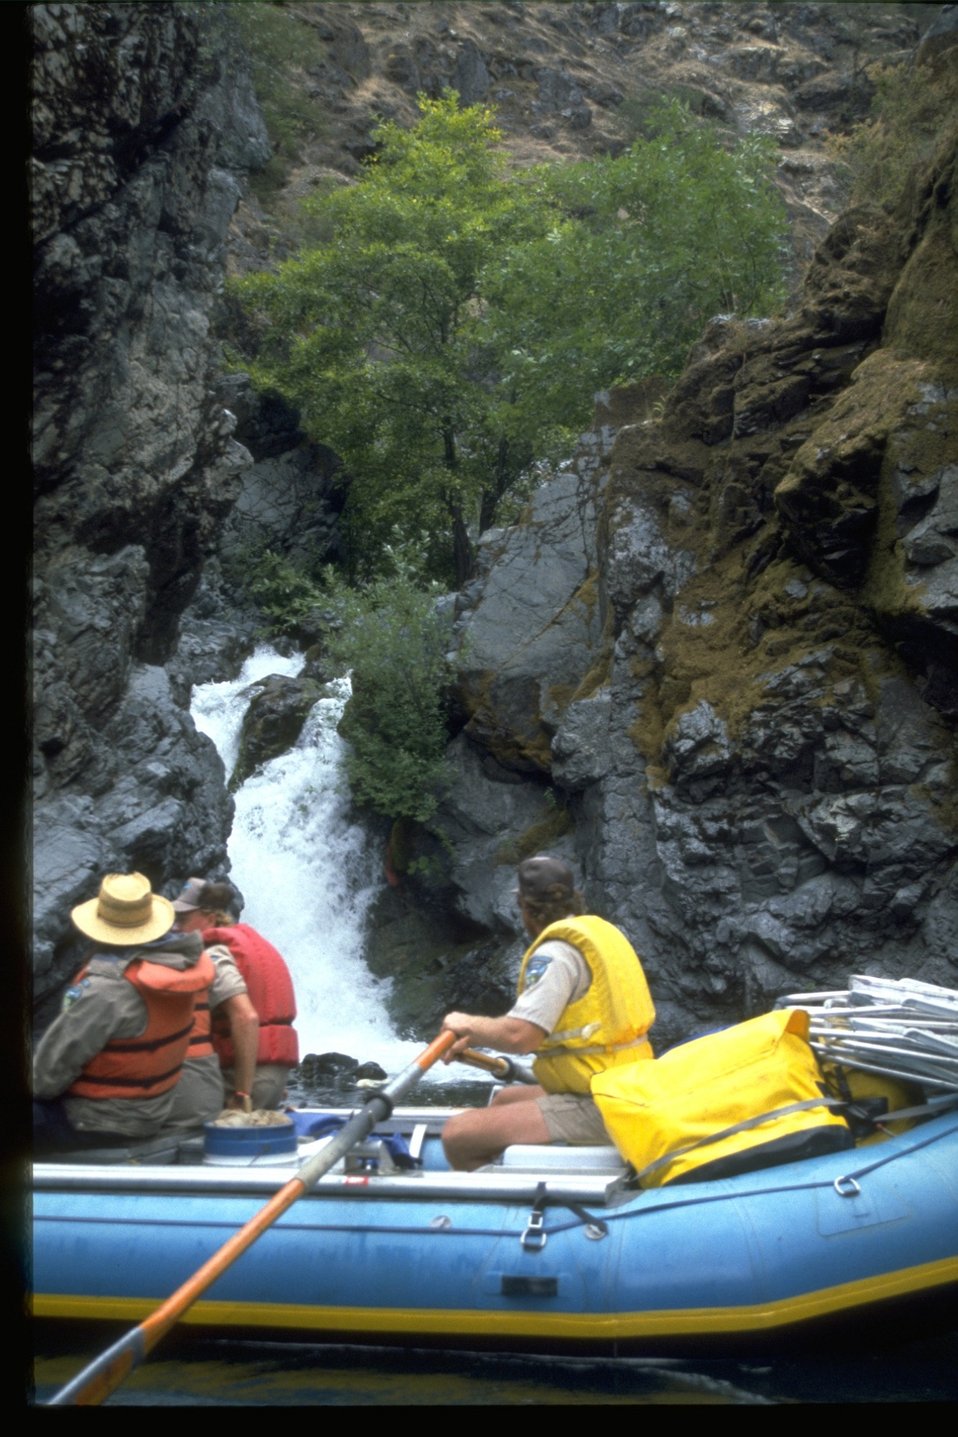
Looking up at Big Windy Creek.